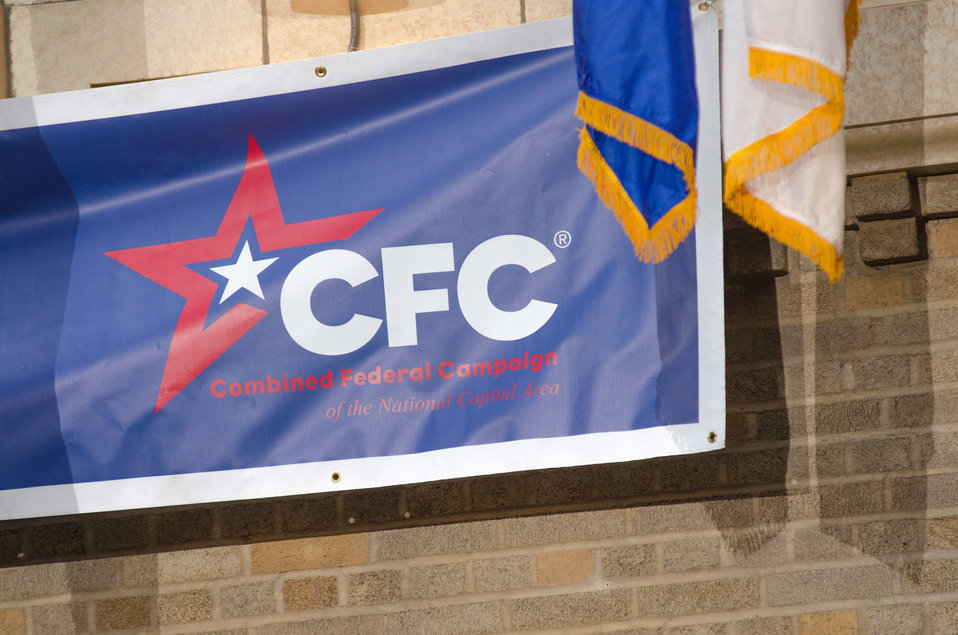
U.S. Department of Agriculture (USDA) 2012 Combined Federal Campaign (CFC) Awards Ceremony, Thursday, Mar. 21, 2013, at the USDA Whitten Building Patio, in Washington D.C.